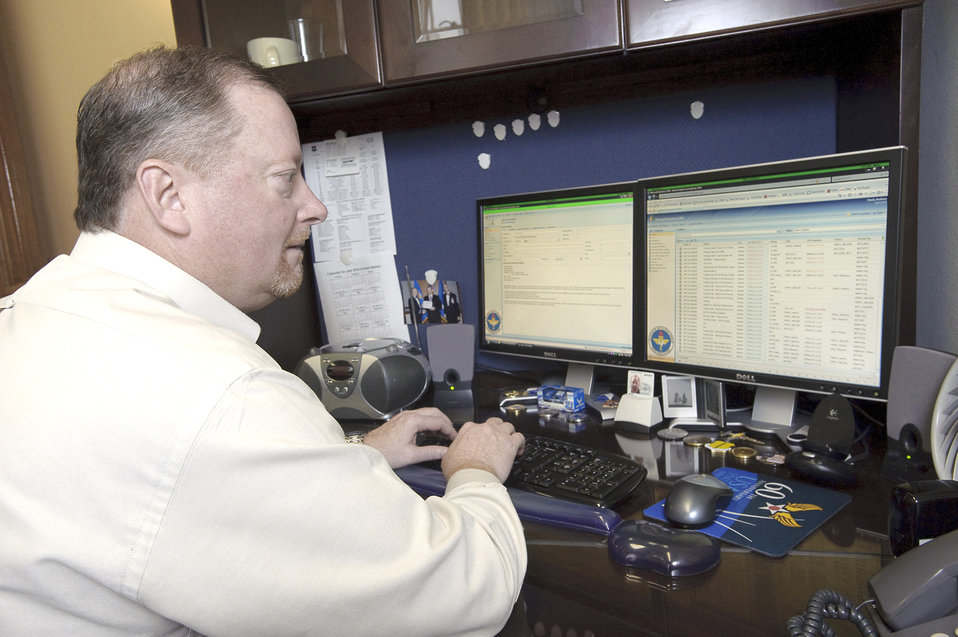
AETC fields new management tool

Insert caption here